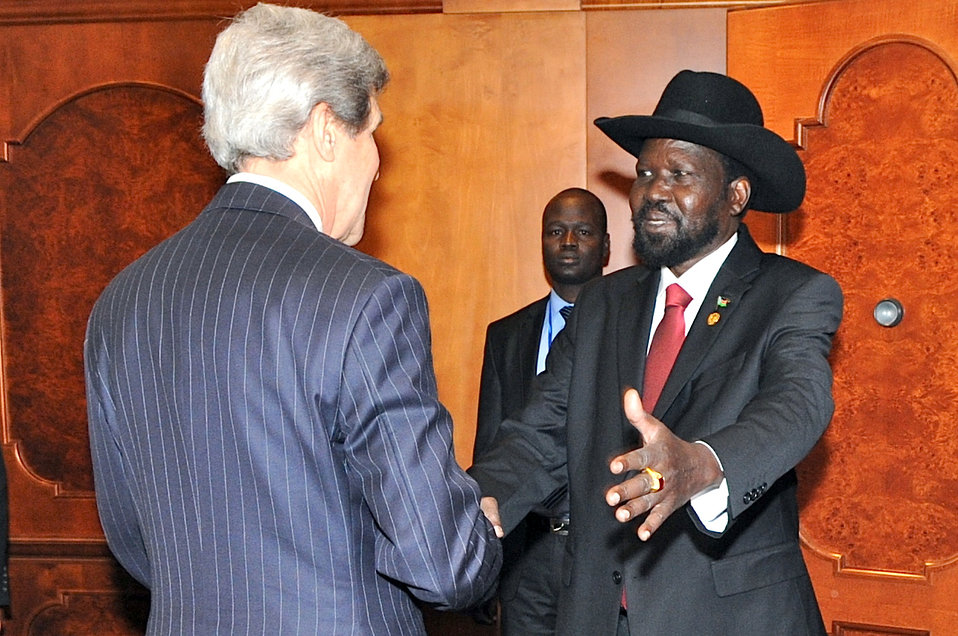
Secretary Kerry Meets With South Sudan President Kiir

U.S. Secretary of State John Kerry meets with South Sudan President Salva Kiir before the conclusion of the 50th anniversary African Union Summit in Addis Ababa, Ethiopia, on May 26, 2013.